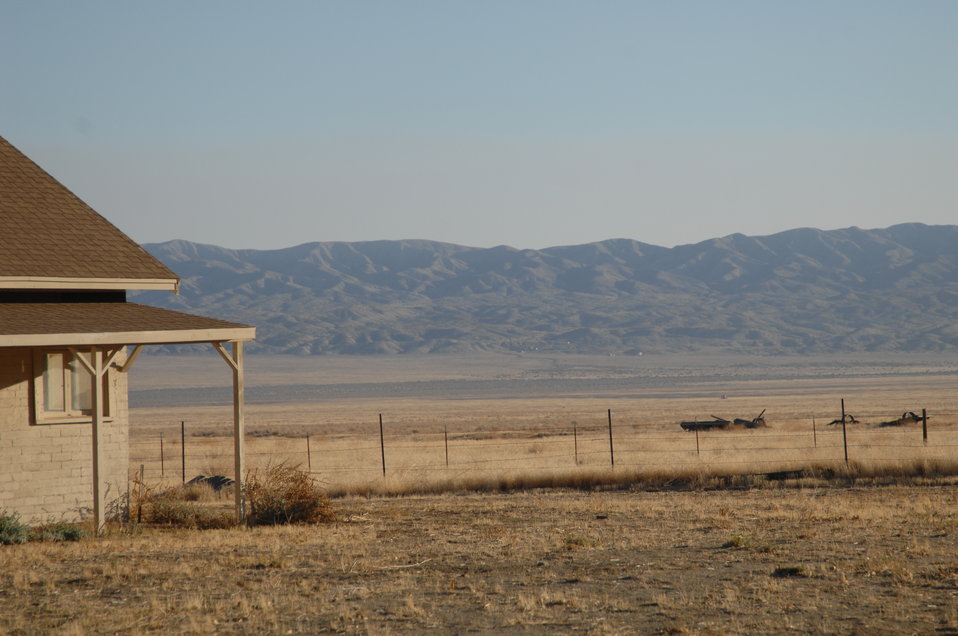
BLM Ranch on the Carrizo Plain 1